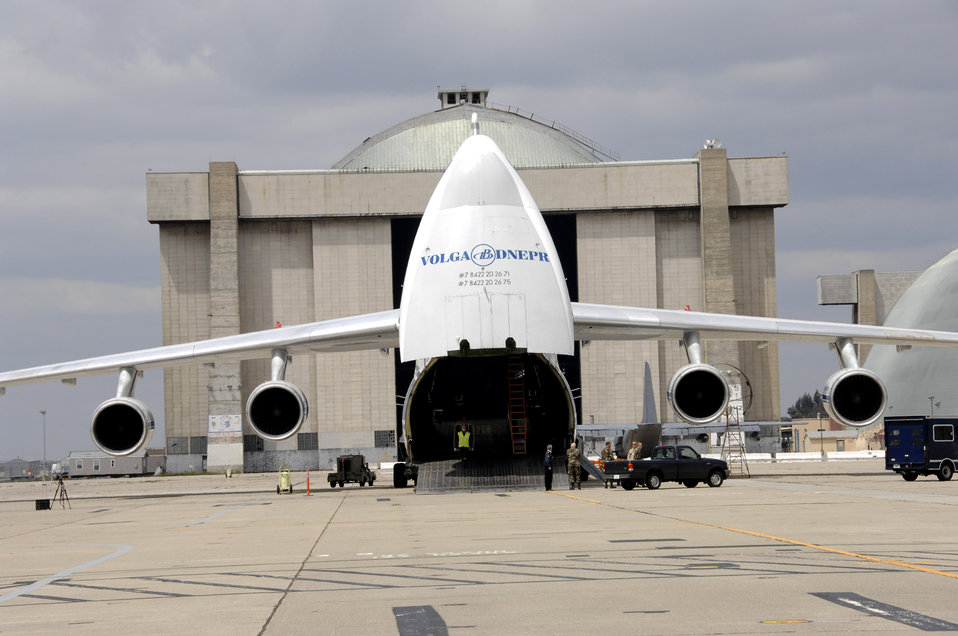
Russian aircraft transports ANG rescue helicopters

A Russian Volga-Dnepr AN-124 long-range heavy transport aircraft is parked April 20 at Moffett Federal Airfield, Calif. The contracted AN-124 transported 129th Rescue Wing deployment cargo to Afghanistan because the high operations tempos of Operations Iraqi Freedom and Enduring Freedom have kept C-17 Globemaster III and C-5 Galaxy aircraft fully engaged.